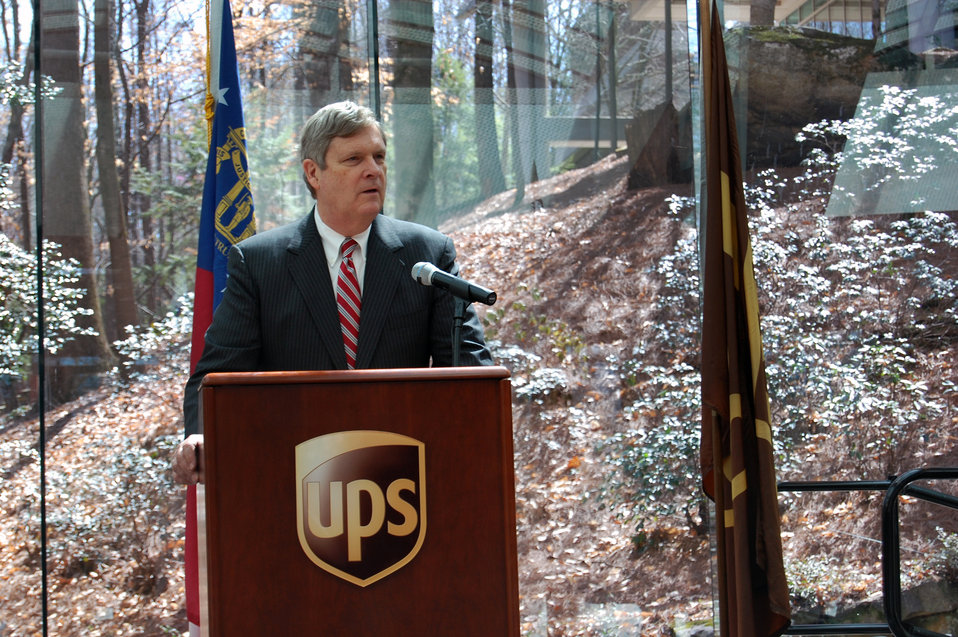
Agriculture Secretary Tom Vilsack speaks to employees and guests at the United Parcel Service (UPS) headquarters in Atlanta, GA, on Thursday, March 21, 2013.